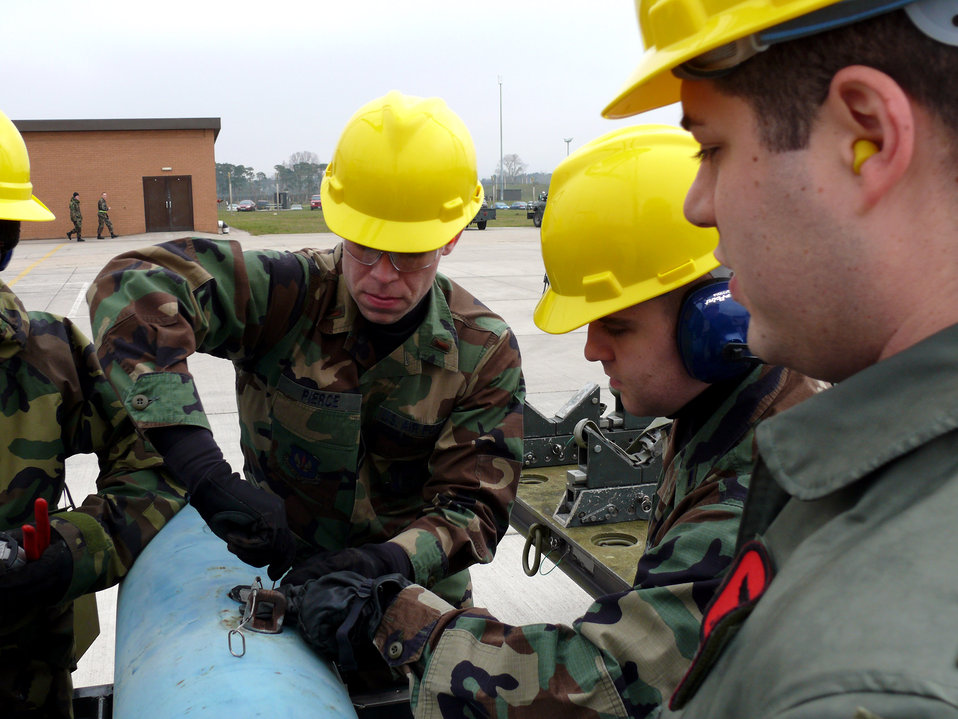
Officers go to bomb-building how-to course

Second Lt. Adam Pierce (left) works on a Mark 82 bomb while 1st Lt. Brian Scozzaro (center) and 1st Lt. Christopher Jones look on. The three took part in a one-day course to better understand what munition specialists have to go through to get bombs ready for a mission.